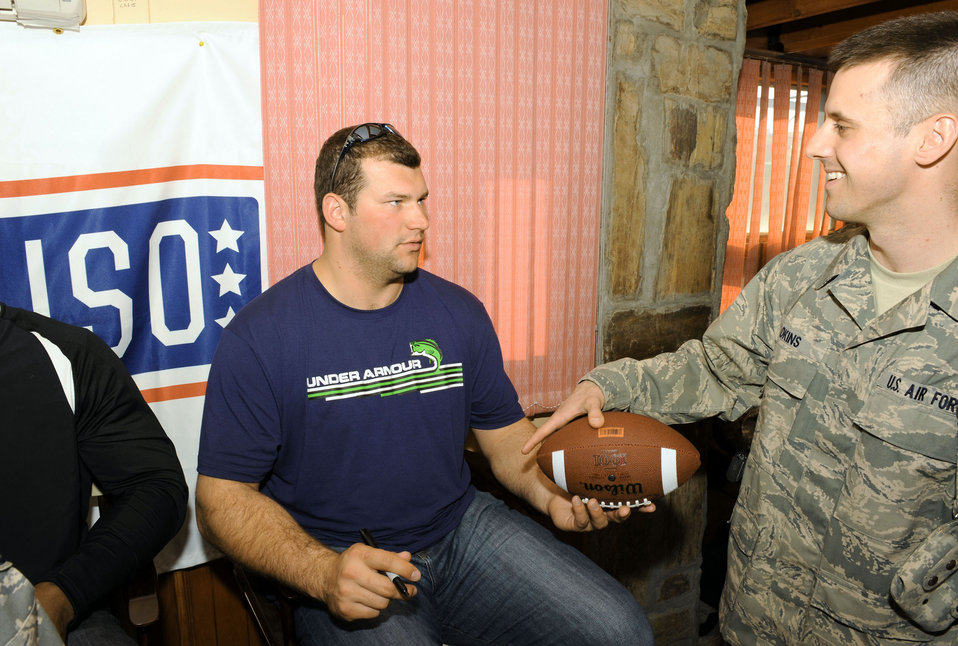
NFL players visit Bagram Airmen

Joe Thomas of the Cleveland Browns signs a football for Senior Airman Joshua Adkins during an autograph session March 5, 2010, at the Pat Tillman USO lounge at Bagram Airfield, Afghanistan. Airman Adkins is an American Forces Network broadcaster.